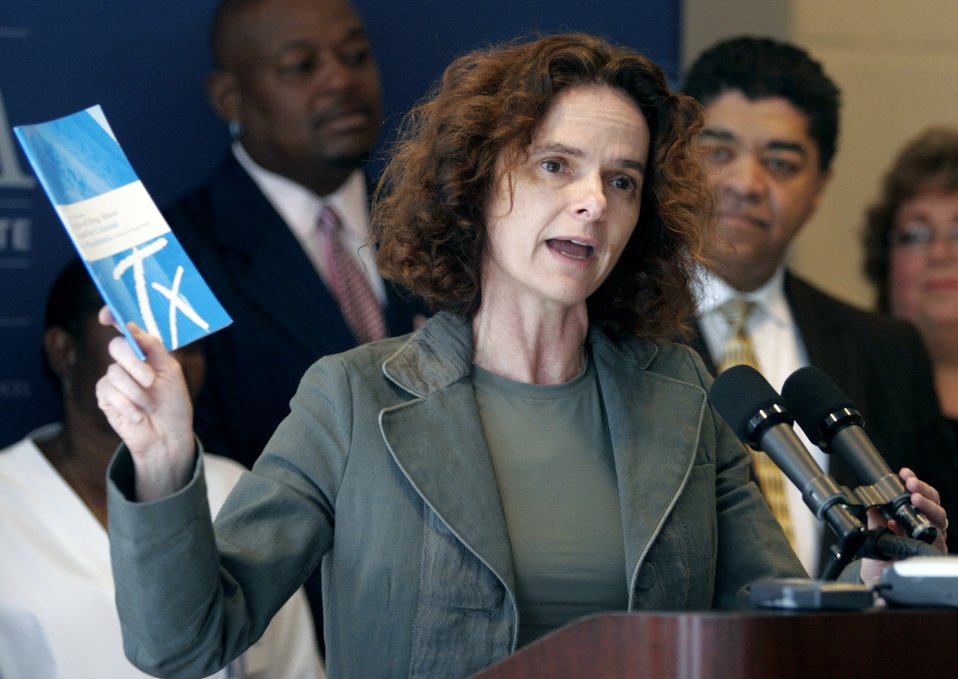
Criminal Justice Report

Dr. Nora D. Volkow Unveils Principles of Drug Abuse Treatment for Criminal Justice Populations Report